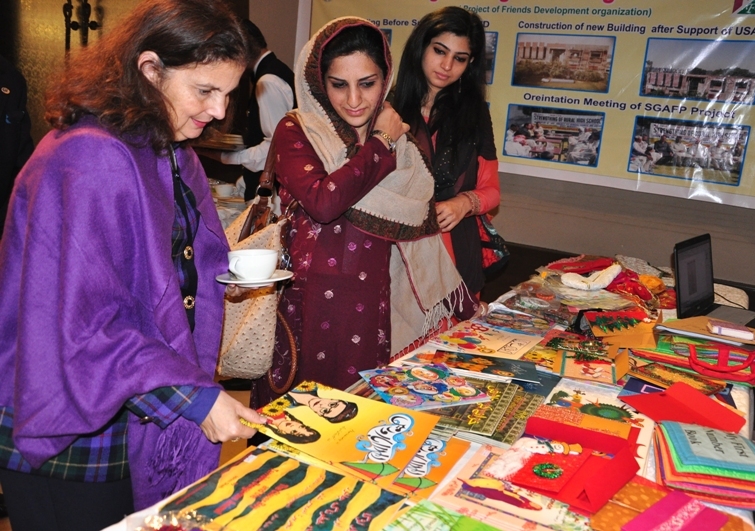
U.S. Consul General Nina Fite browsing through various education material on Alif Laila Book Bus Society stall.